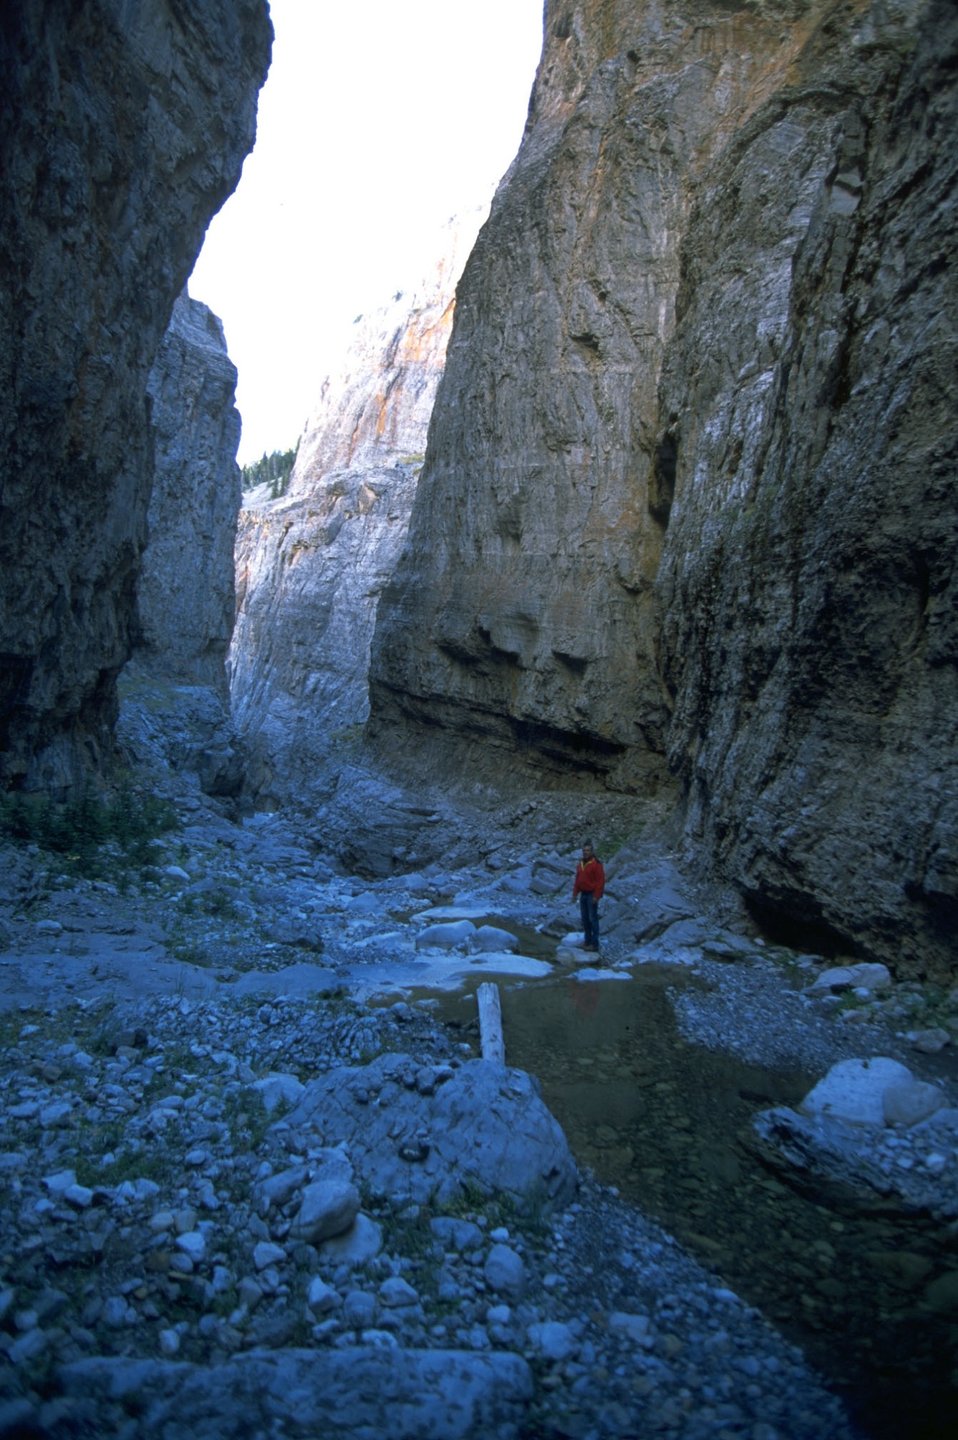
Looking east at Muddy Creek in the Rocky Mountain Front